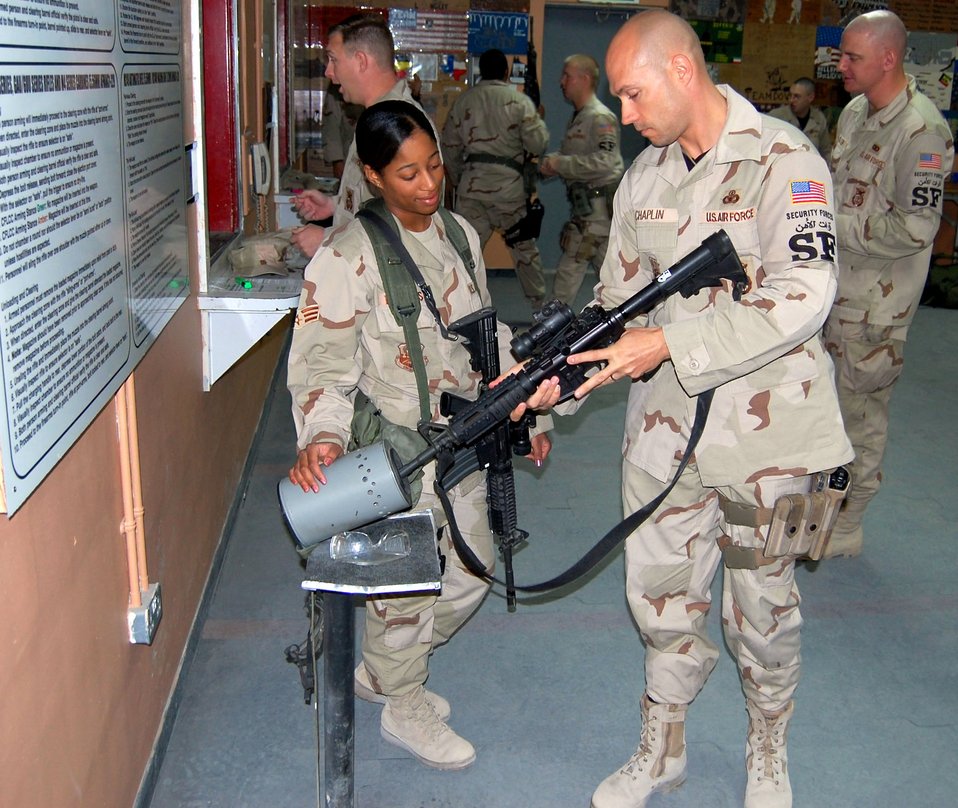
Deployed security forces SET to go

Master Sgt. Scott Chaplin clears his M-4 carbine under the supervision of Senior Airman Akia Barnes Nov. 23 in Southwest Asia. Sergeant Chaplin, 386th Expeditionary Security Forces Squadron security actions team NCO in charge is from Hickam Air Force Base, Hawaii, and Airman Barnes, 386th ESFS patrolman, is from Offutt Air Force Base, Neb.